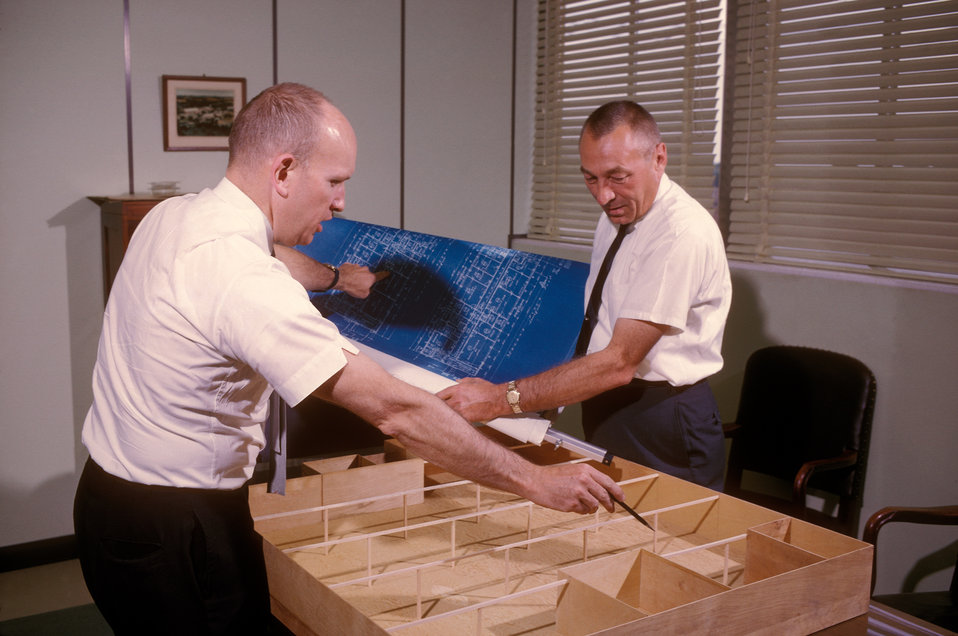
This 1965 photograph showed James G. Paine (left), and R. Meuleners going over the blueprint and model of a new CDC facility which was being constructed on the Centers for Disease Control's Chamblee campus.